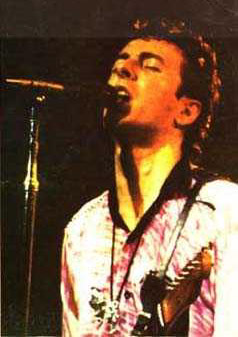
en:Joe Strummer